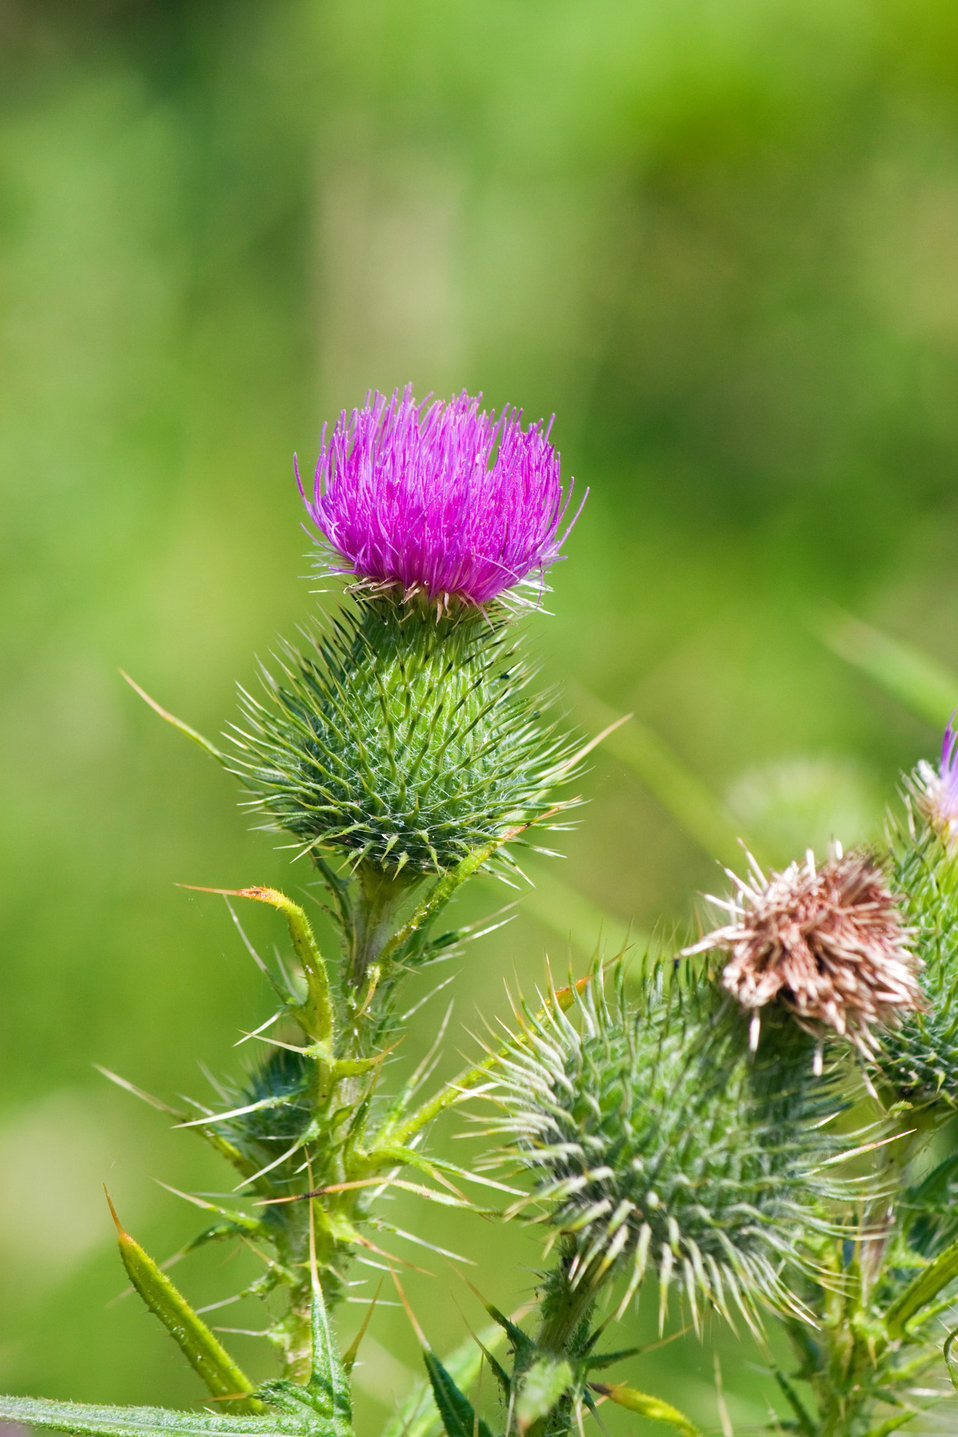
Thistle flower

Pink flowering thistle.